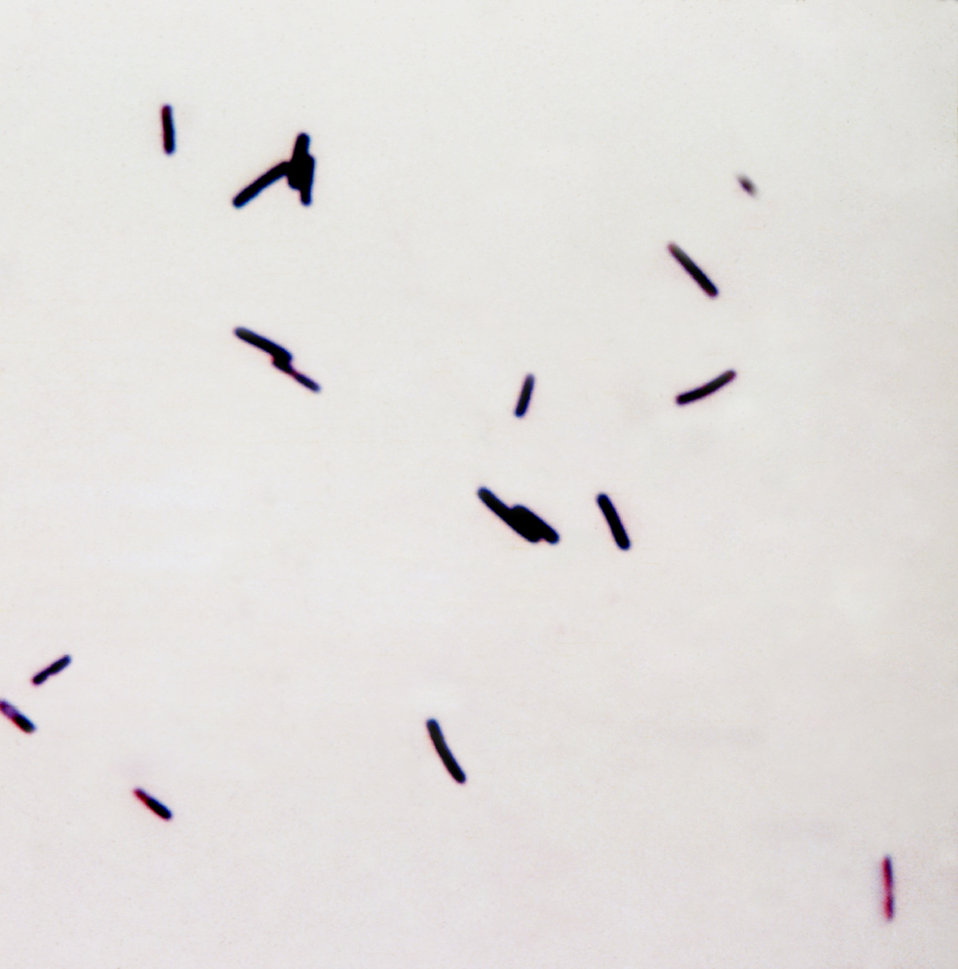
This Gram-stain micrograph depicts Clostridium difficile after 24hrs of growth in chopped meat medium; Magnified 956X.